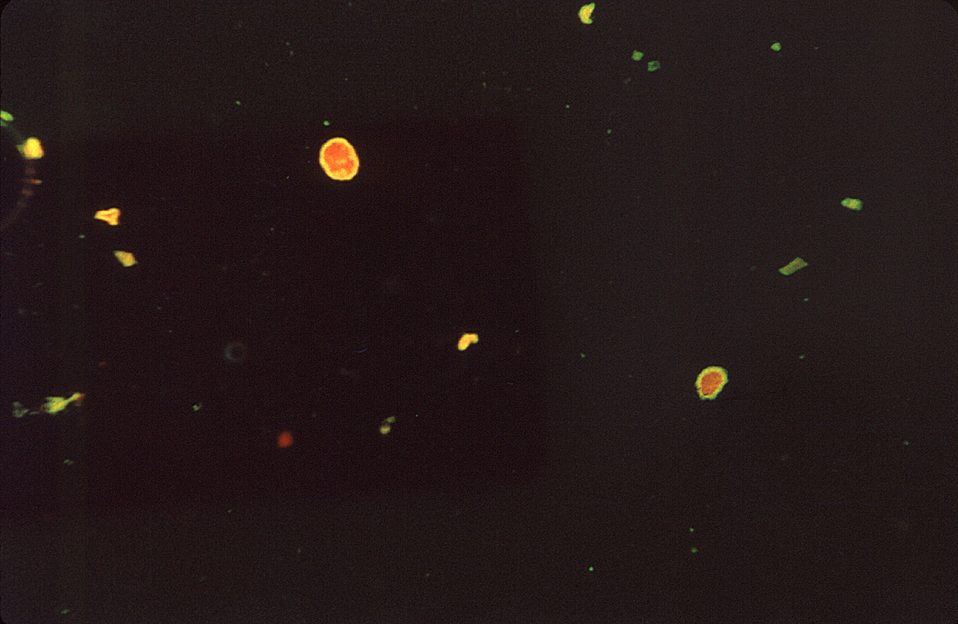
Under a low magnification of 78X, and stained using an indirect fluorescent antibody (IFA) test, this photomicrograph confirmed the presence of Schistosoma mansoni trematodes.Laboratory Diagnosis for Schistosomiasis: